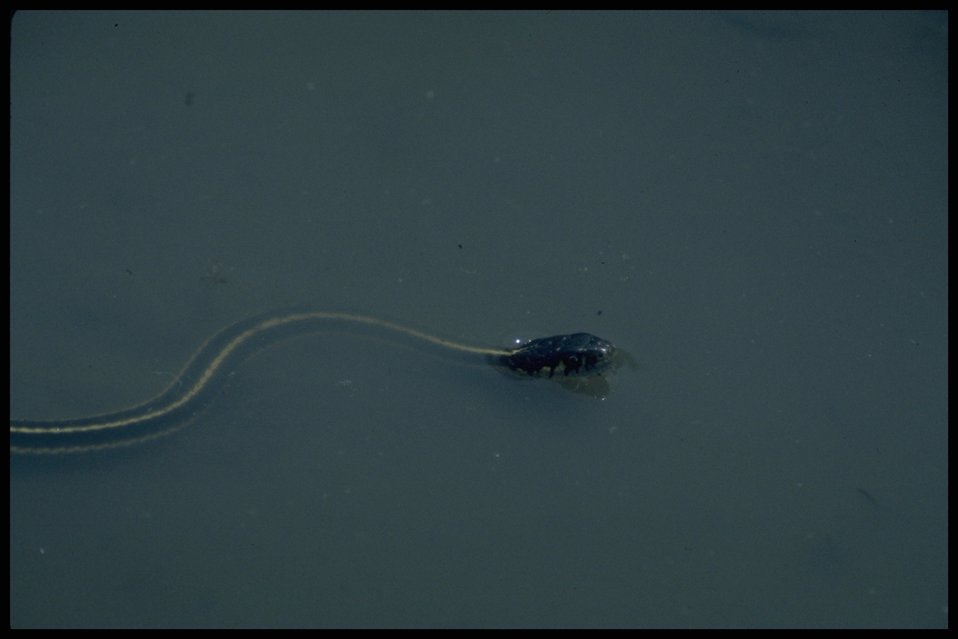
Garter snake, Lakeview District.